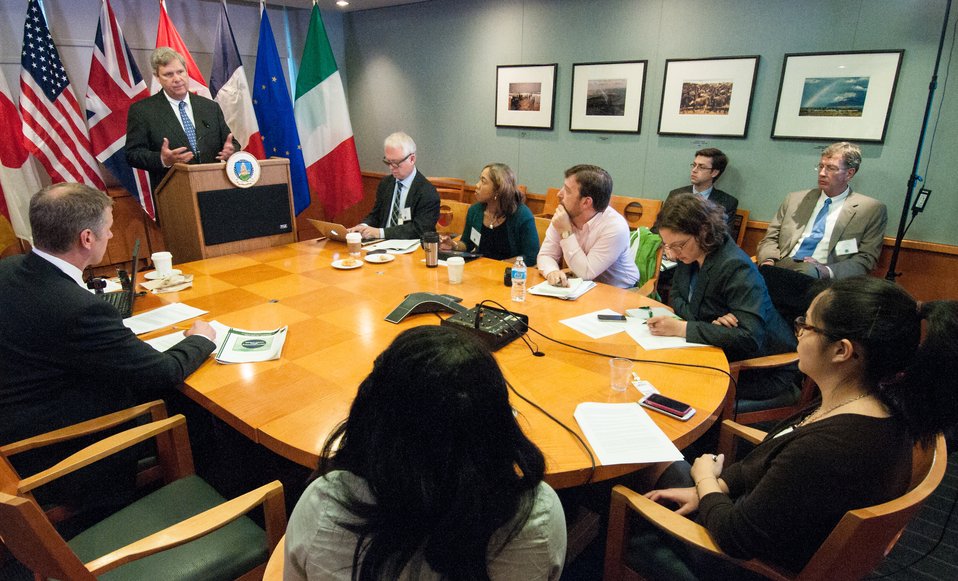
Agriculture Secretary Tom Vilsack held a press conference after giving the opening remarks at the G-8 International Conference on Open Data for Agriculture in Washington, D.C. on Monday, Apr. 29, 2013. The conference launched a new 'virtual community' of Food, Agriculture, and Rural data on Data.gov-the U.S. Government's data sharing website-to catalogue America's publicly available agricultural data and increase the ability of the public to find, download, and use datasets that are generated and held by the Federal Government. The data community features a collection of more than 300 newly cataloged datasets, databases, and raw data sources related to food, agriculture, and rural issues from agencies across the U.S. Government. In addition to the data catalog, the virtual community shares a number of applications, maps and tools designed to help farmers, scientists and policymakers improve global food security and nutrition.